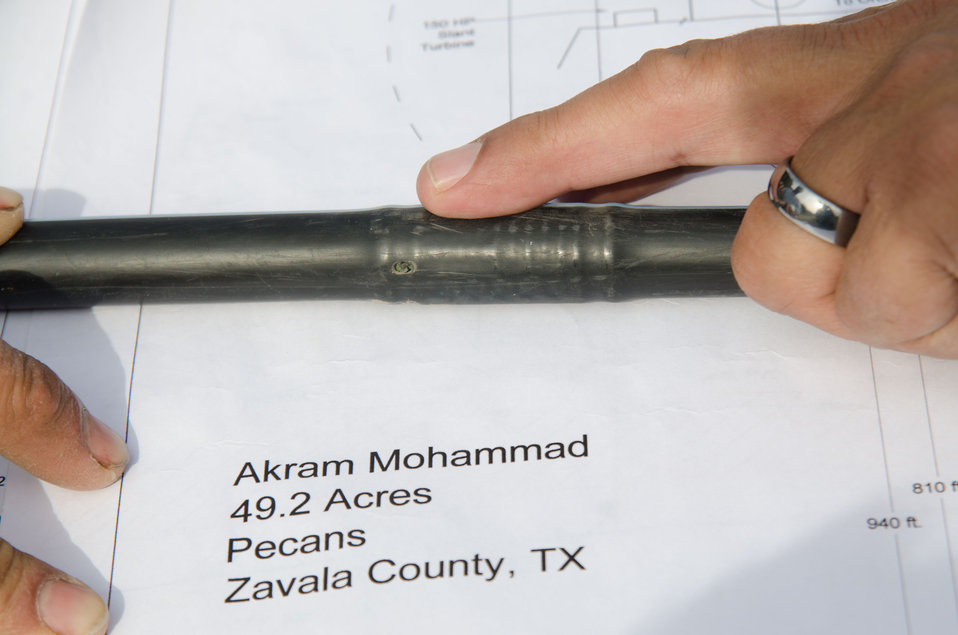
A micro-irrigation drip emitter on an irrigation plan for one of the orchards at Arrowhead Farms of Crystal City, TX, on Friday December 9, 2011, owned by Mr. Akram Mohammad, a pecan farmer since 2005. The 719 acre farm with 10,000 trees, features some orchards with underground micro irrigation system that feeds water to the roots of 4,380 pecan trees on 146 acres. Mr. Mohammad said, “USDA (U.S. Department of Agriculture) was essential to my business and trees surviving the recent exceptional drought. The trees were stress free thanks to underground micro-irrigation. This is essential to the future growth of Texas agriculture and good for America.” U.S. Department of Agriculture’s (USDA) Environmental Quality Initiative Program (EQIP) awarded Mr. Mohammad a $130,000 grant in 2008. He provided $26,000 for the balance of the $156,000 total cost to install a 146-acre underground micro-irrigation for 4,380 trees.